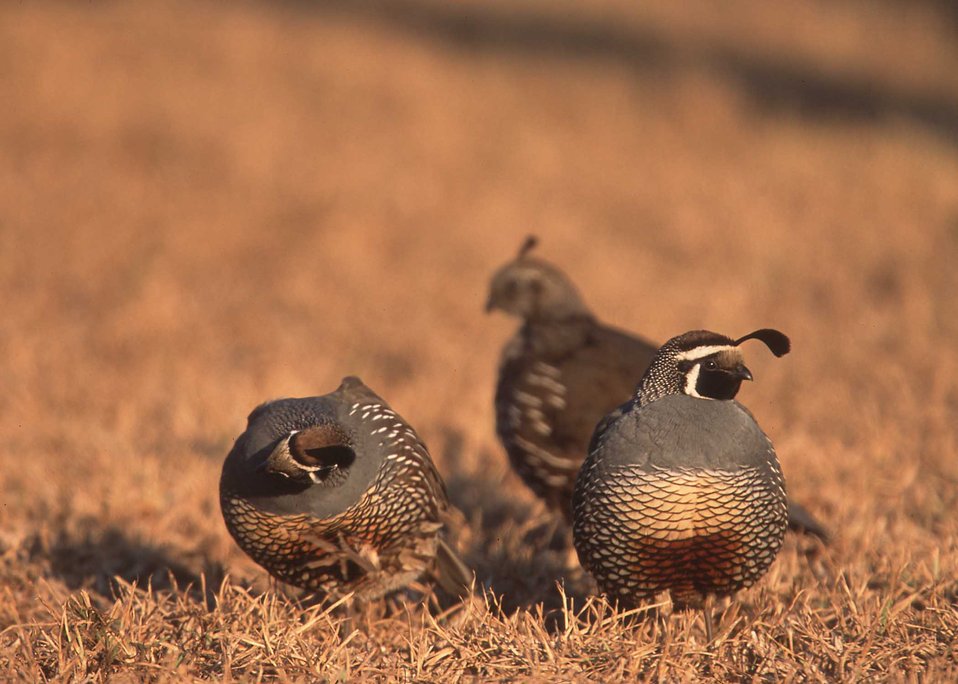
California Quail in Hawaii.